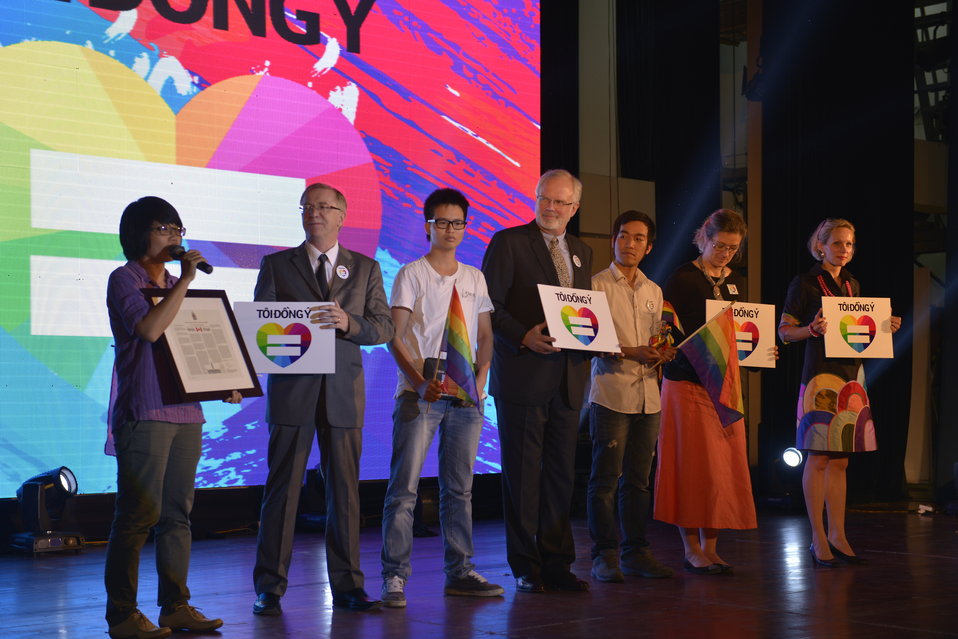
Ambassador David Shear helps to present a gift to the LGBT community

USAID Vietnam